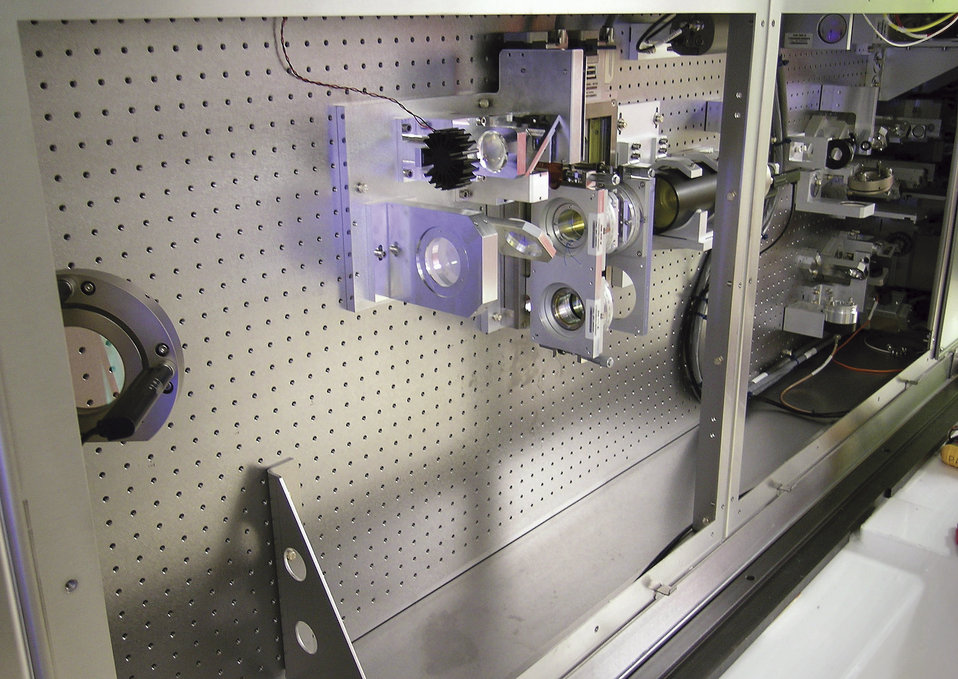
Leopard, a liquid crystal programmable spatial sharper developed for National Ignition Facility, uses patterned masks to smooth and notify the spatial shape of laser pulses.

The National Ignition Facility at LLNL enables key programs and technologies that support DOE's National Nuclear Security Administration Defense Programs and LLNL missions, ensuring that the national's weapons remain safe, secure and reliable. NIF, one of the cornerstones of DOE's stockpile stewardship program, will integrate the inertial confinement fusion program into the overall stockpile stewardship program and foster the development of associated laser technologies.